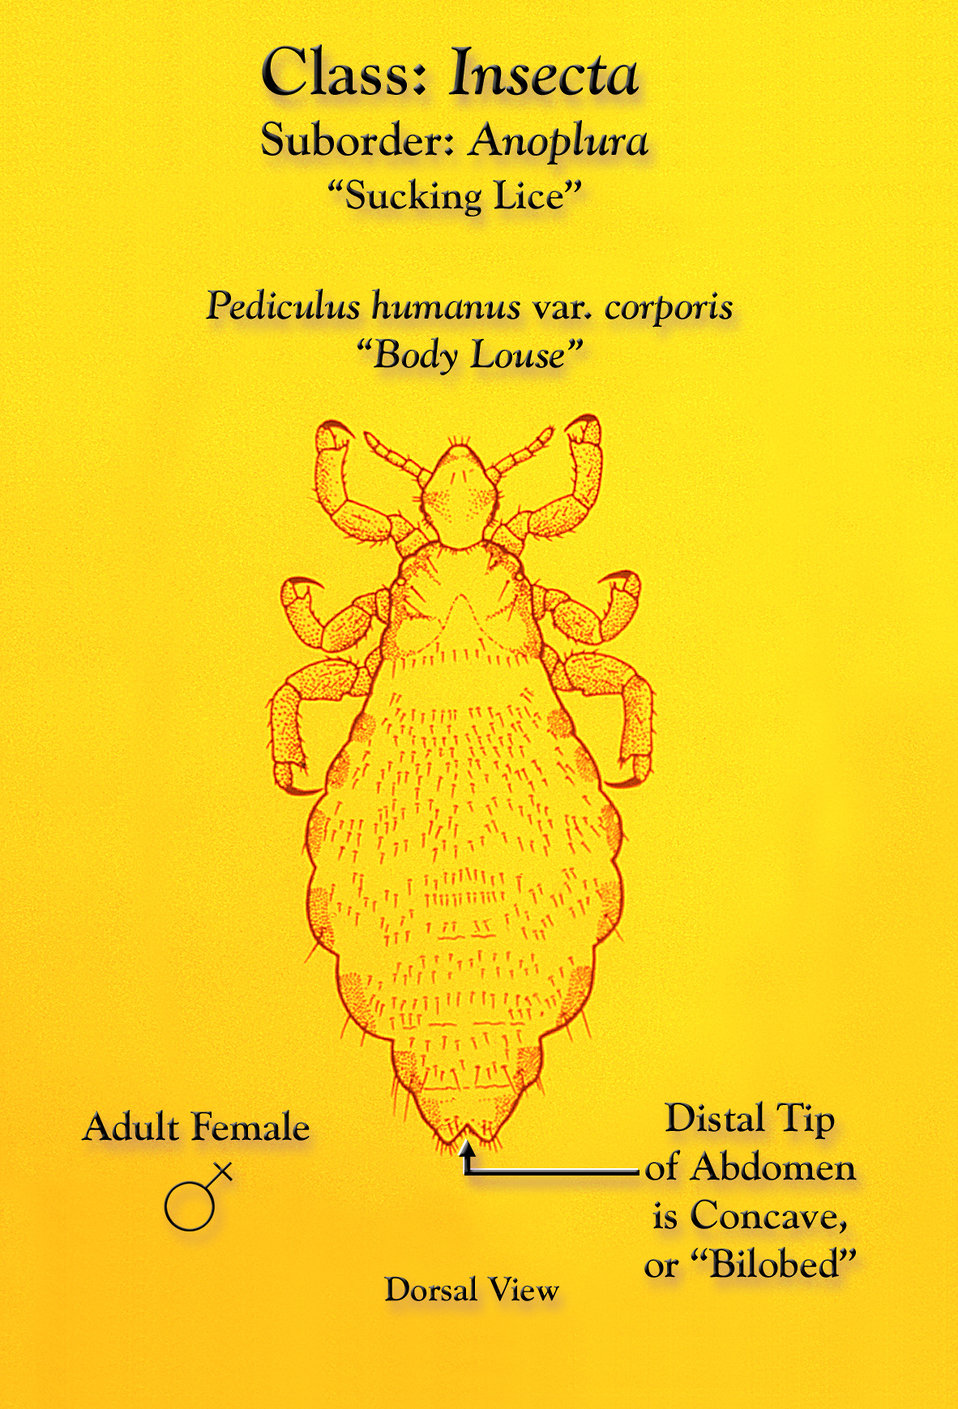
This illustration depicts a dorsal view of a female body louse, Pediculus humanus var. corporis.